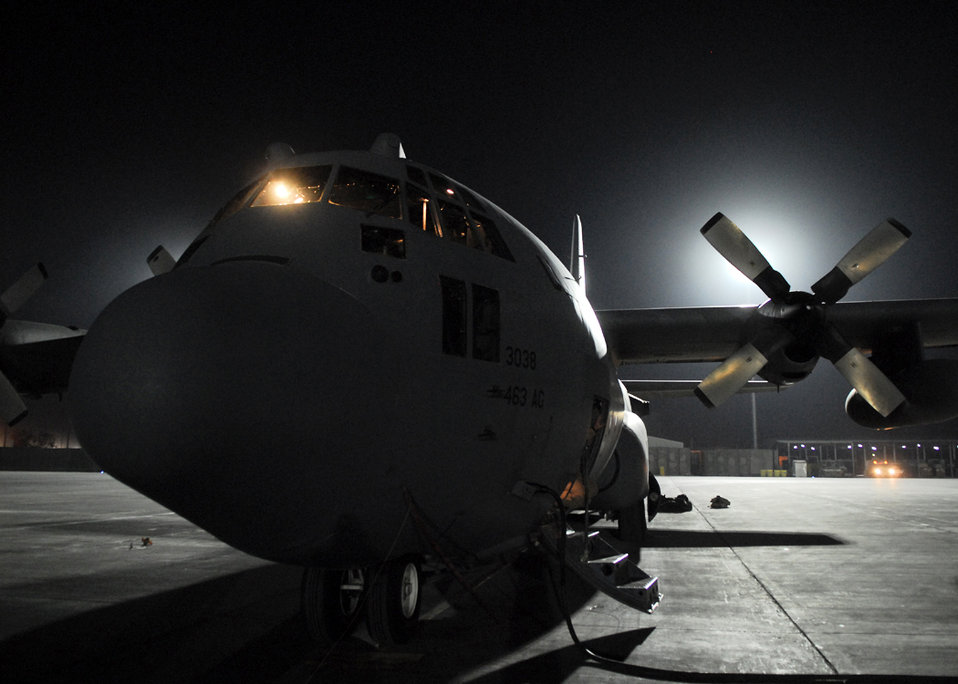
Airpower Summary for Nov. 8, 2007

Airmen from the 777th Expeditionary Airlift Squadron at Balad Air Base, Iraq, prepare a C-130 Hercules for a mission. Air Force transports provide intra-theater heavy airlift support, helping to sustain operations throughout Afghanistan, Iraq and the Horn of Africa.